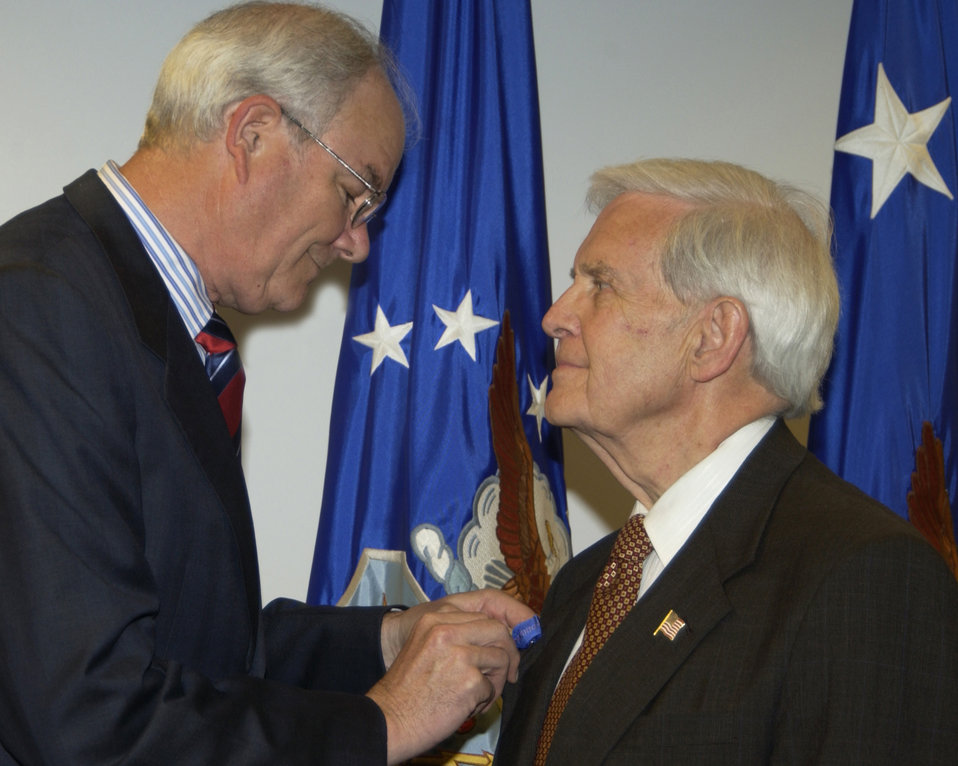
Exceptional Civilian Service presentation

Secretary of the Air Force Michael W. Wynne presents Ron Hall, a civilian Air Force photographer at the Pentagon, with an exceptional civilian service award for his 50 years of service to the Air Force.